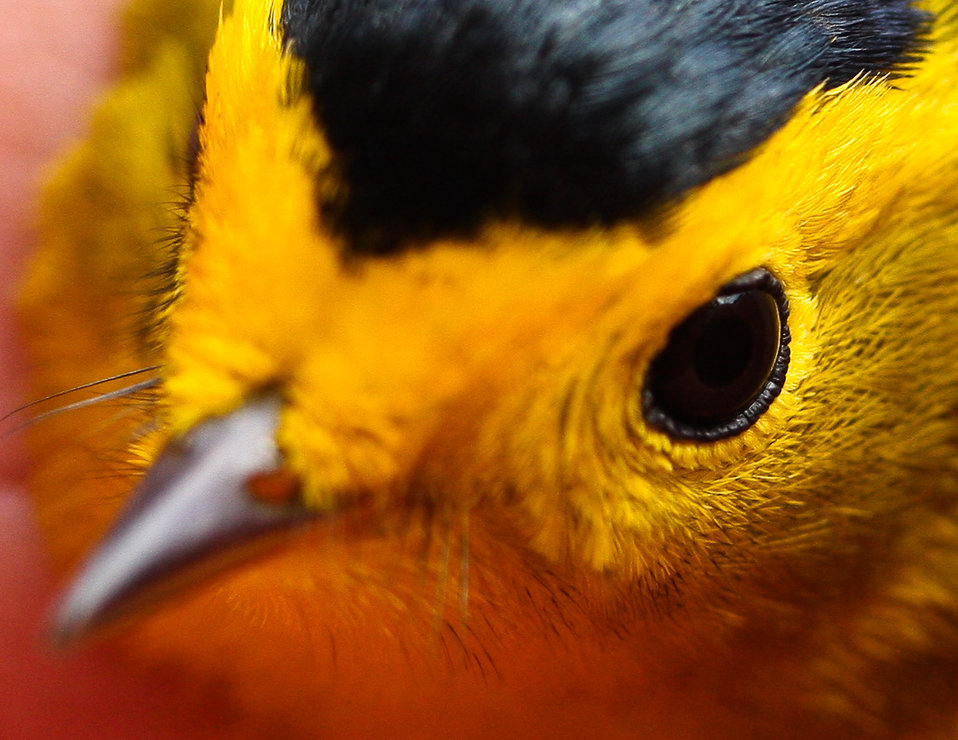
Wilson's Warbler

Lisa Hupp/USFWS